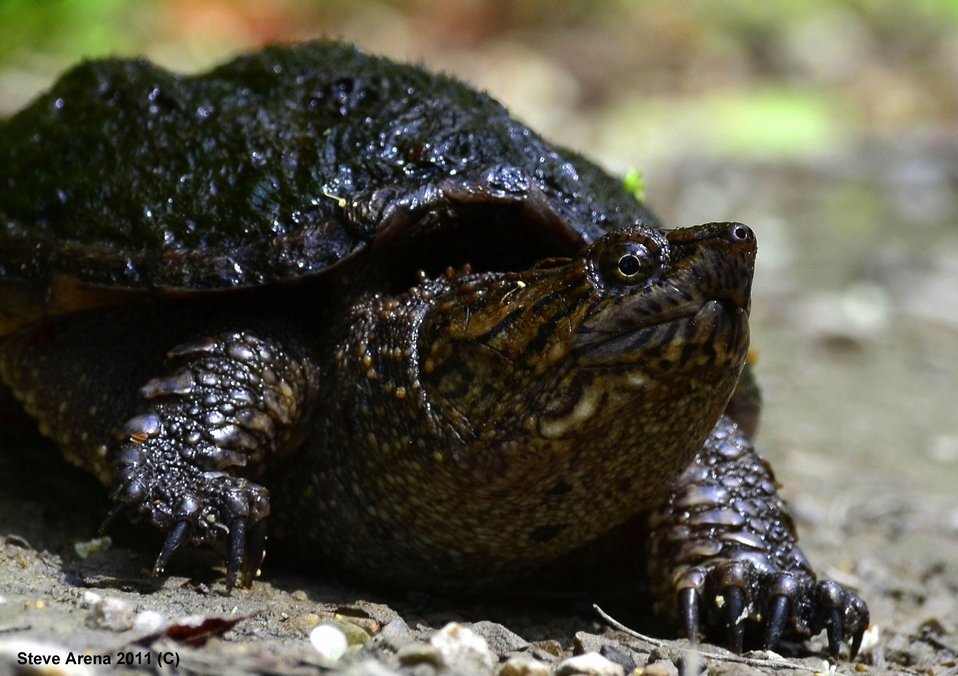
Young Common Snapping Turtle (Chelydra serpentina) along dike 10 June 2011

Common snapping turtle at Great Meadows National Wildlife Refuge.